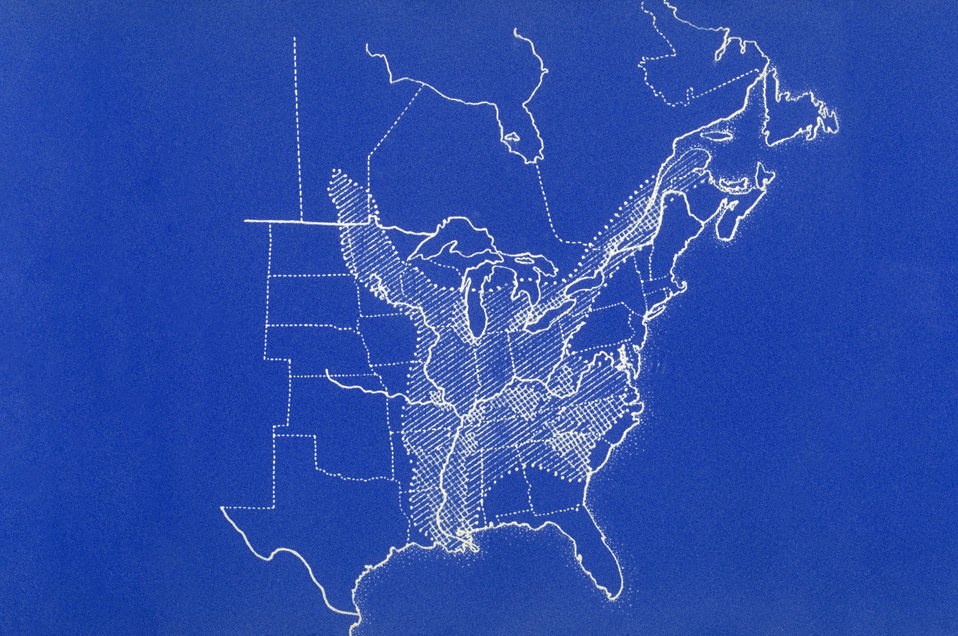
Map of eastern United States and Canada showing distribution of reported cases of blastomycosis.